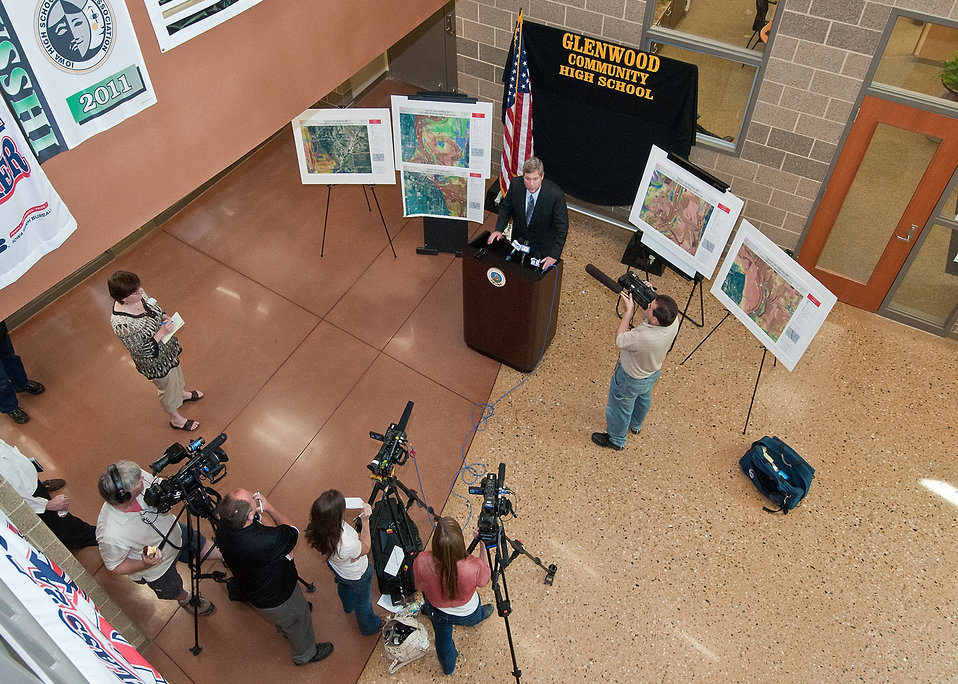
Agriculture Secretary Tom Vilsack held a town hall meeting at the Glenwood Community High School in Glenwood, Iowa on Thursday, June 16, 2011. Farmers, local and regional media listened and questioned Secretary Vilsack on the cause of the floodwaters along the Missouri River affecting Iowa and Nebraska. Secretary Vilsack offered advice and assistance available through the United States Department of Agriculture and other federal agencies.